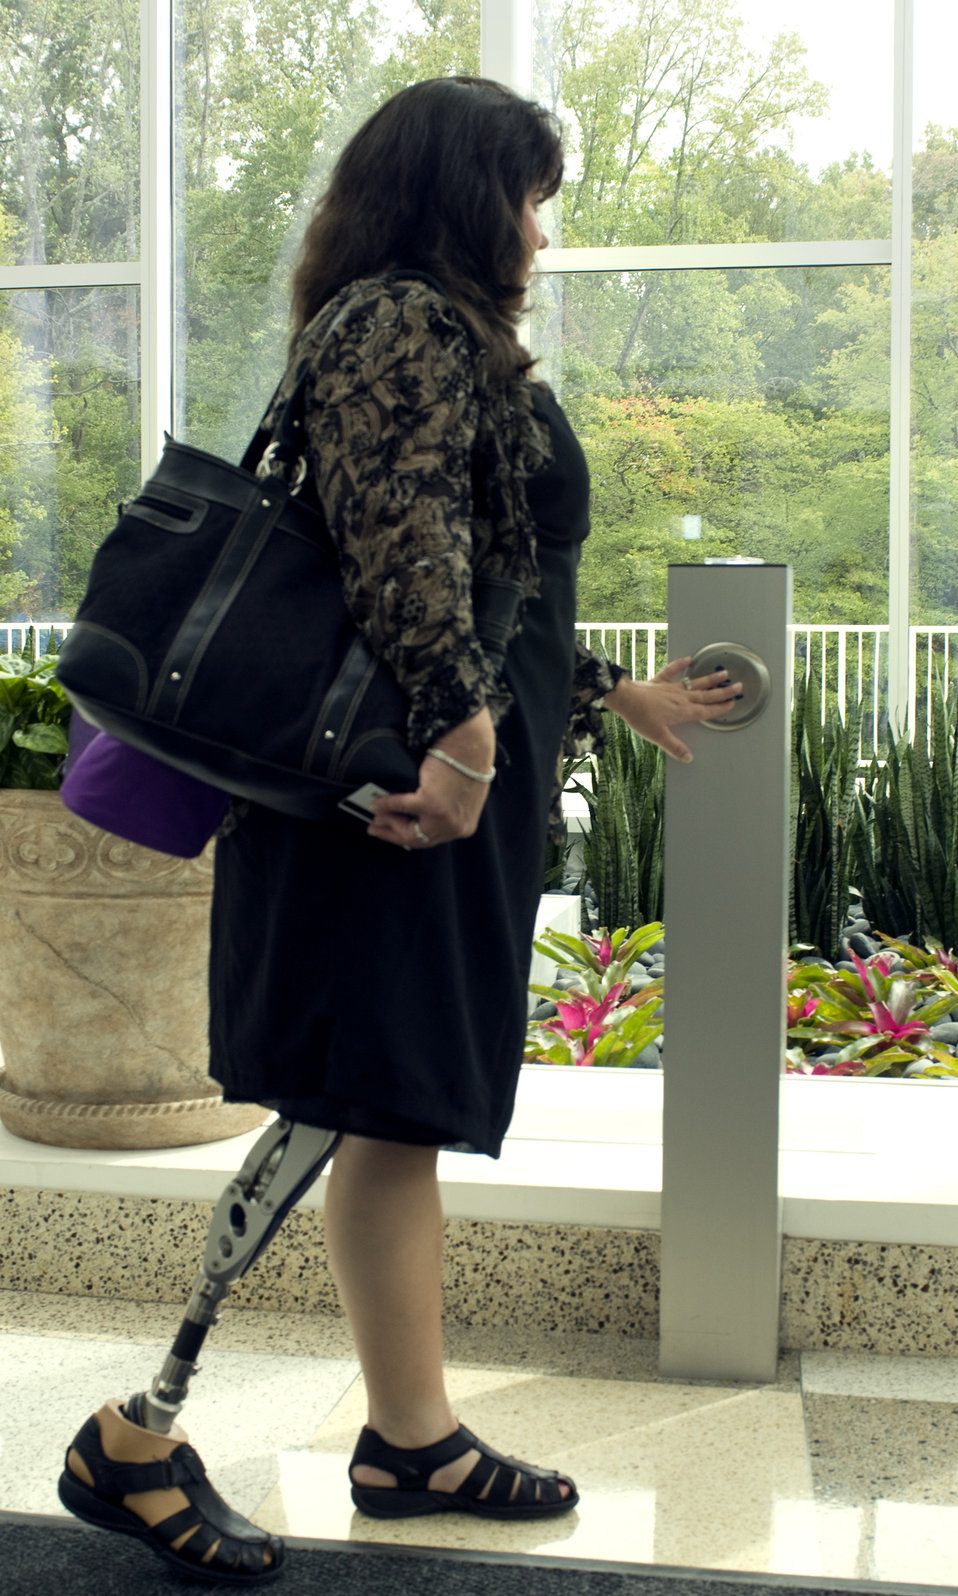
Having conducted her intended business inside a building located on one of the Centers for Disease Control and Prevention's (CDC) campuses, this woman, who was equipped with a right extremity fitted prosthesis, was about to leave the building, and had pressed the door-opening touch pad, which would open the mechanized door, thereby, allowing her to exit easily.